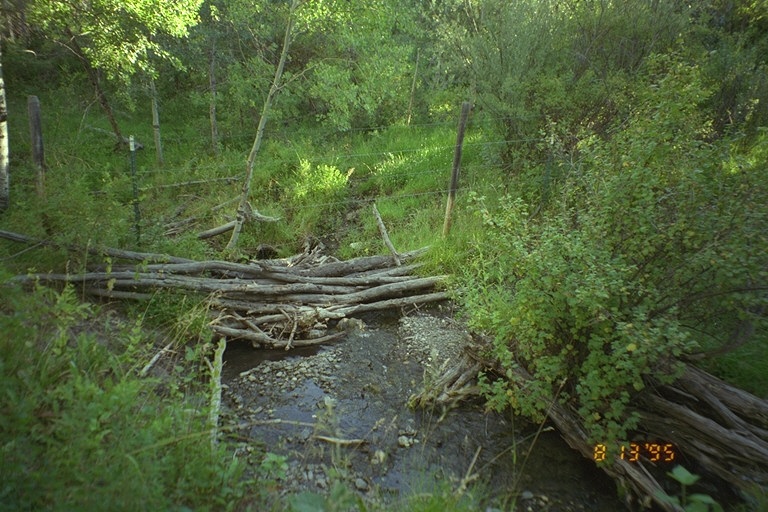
Riparian area Public Lands Salmon Field Office UCSC Upper Columbia Salmon Clearwater District